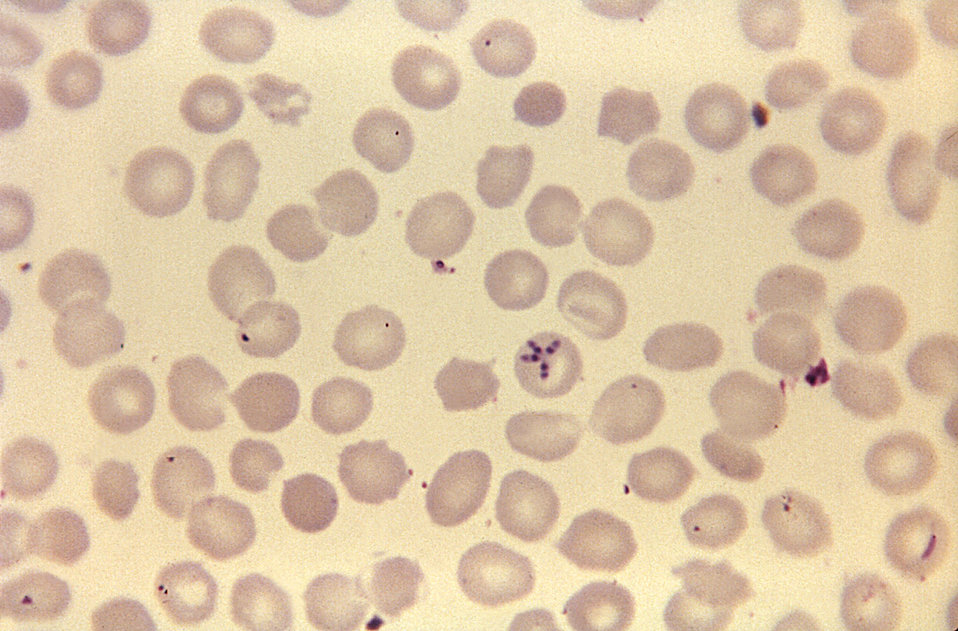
Note the developmental 'tetrad' configuration of these Babesia sp. trophozoites, which resemble P. falciparum.